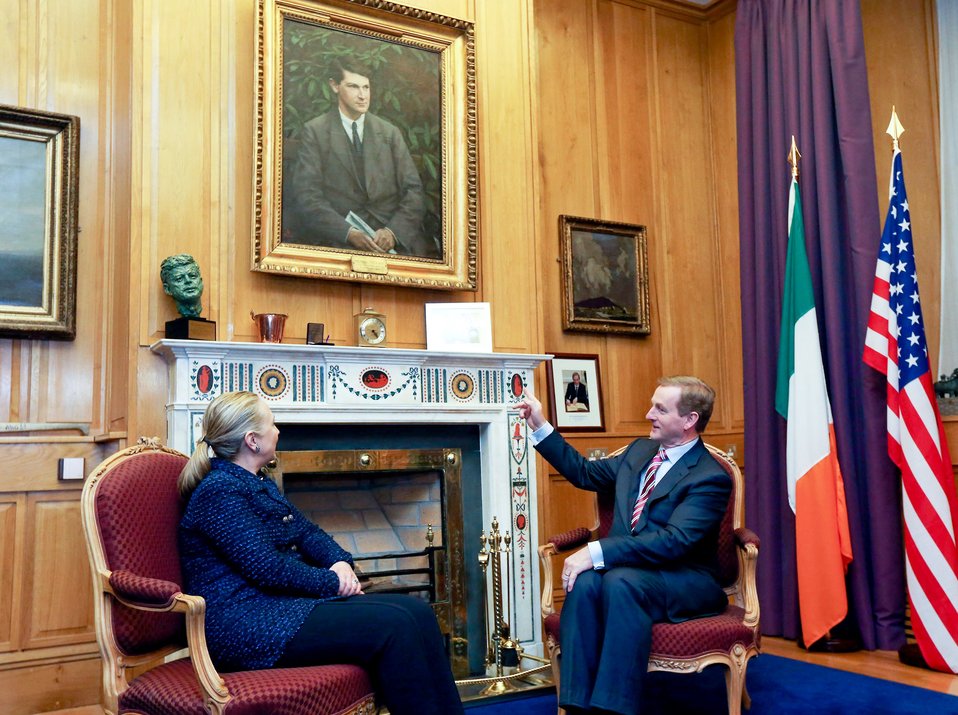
Secretary Clinton Meets With Taoiseach Kenny

U.S. Secretary of State Hillary Rodham Clinton meets with Taoiseach Enda Kenny in Dublin, Ireland, December 6, 2012.